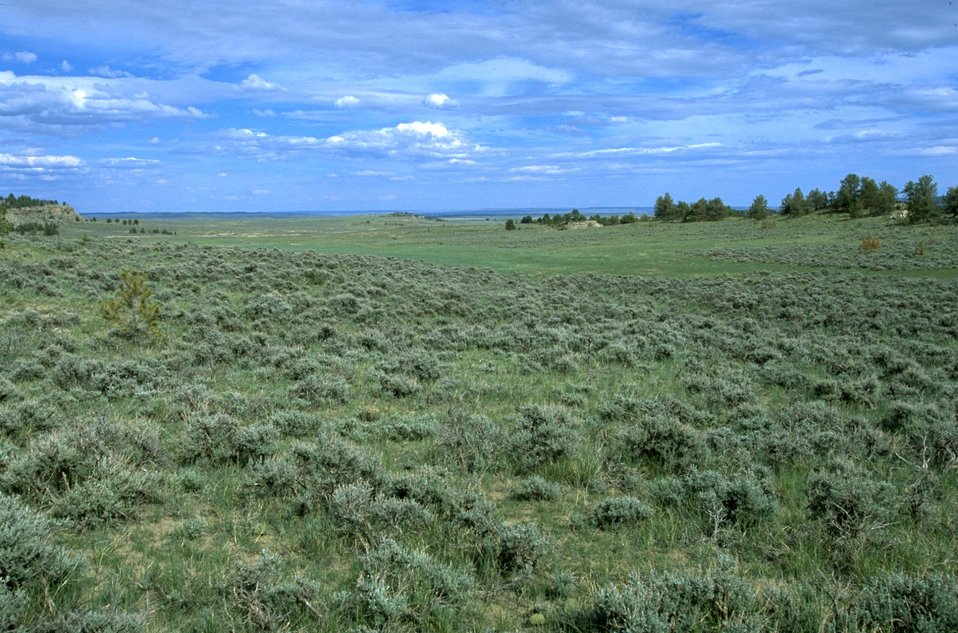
Sagebrush and grass in the Action Recreation Area